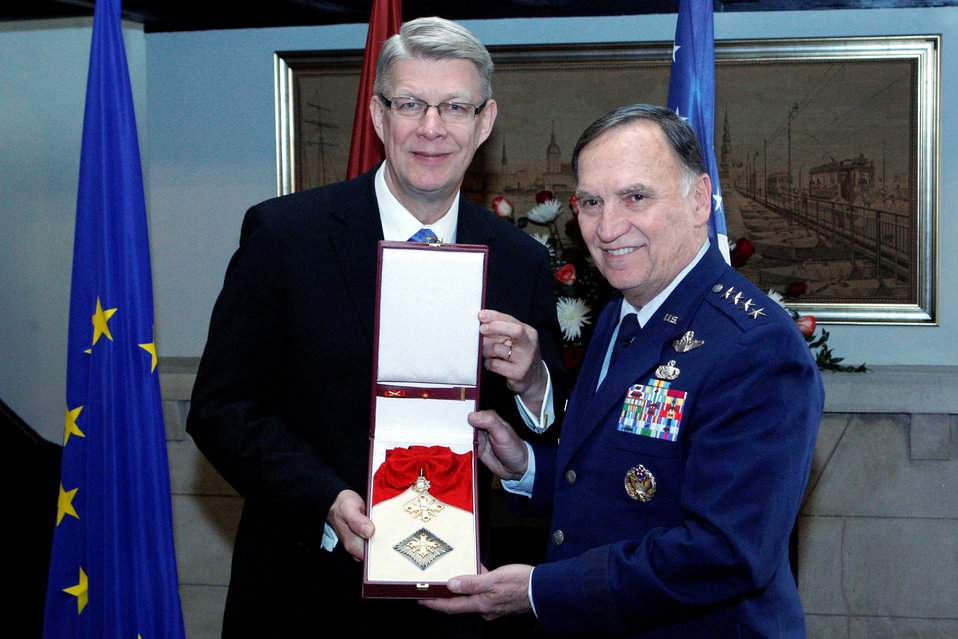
Former COMUSAFE awarded highest Latvian honor

Latvian President Valdis Zatlers awards retired Gen. William Tom Hobbins the Order of Viesturs, First Grade, April 1, 2011, in Washington, D.C., in recognition of the general's investment in helping to ensure the success of the NATO summit in Riga, Latvia, in November 2006. General Hobbins was the U.S. Air Forces in Europe commander from 2005 to 2008.